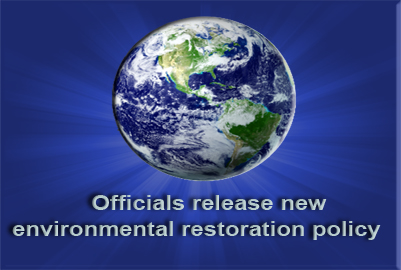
Officials release new environmental restoration policy